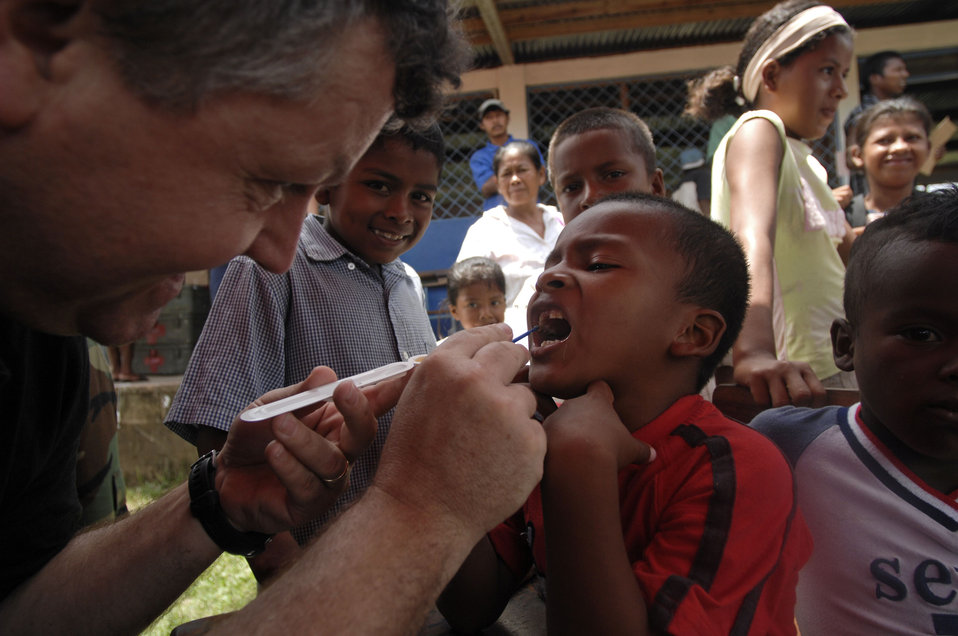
Photographed by U.S. Navy photographer, Mass Communication Specialist, 2nd Class, Erik C. Barker, in Betania, Nicaragua, this 2008 image depicts U.S. Public Health Service (USPHS) Lt. Cmdr. Gary Brunette in the process of cleaning and applying fluoride to the teeth of a young Nicaraguan boy so that over time, the enamel of his teeth would be strengthened.